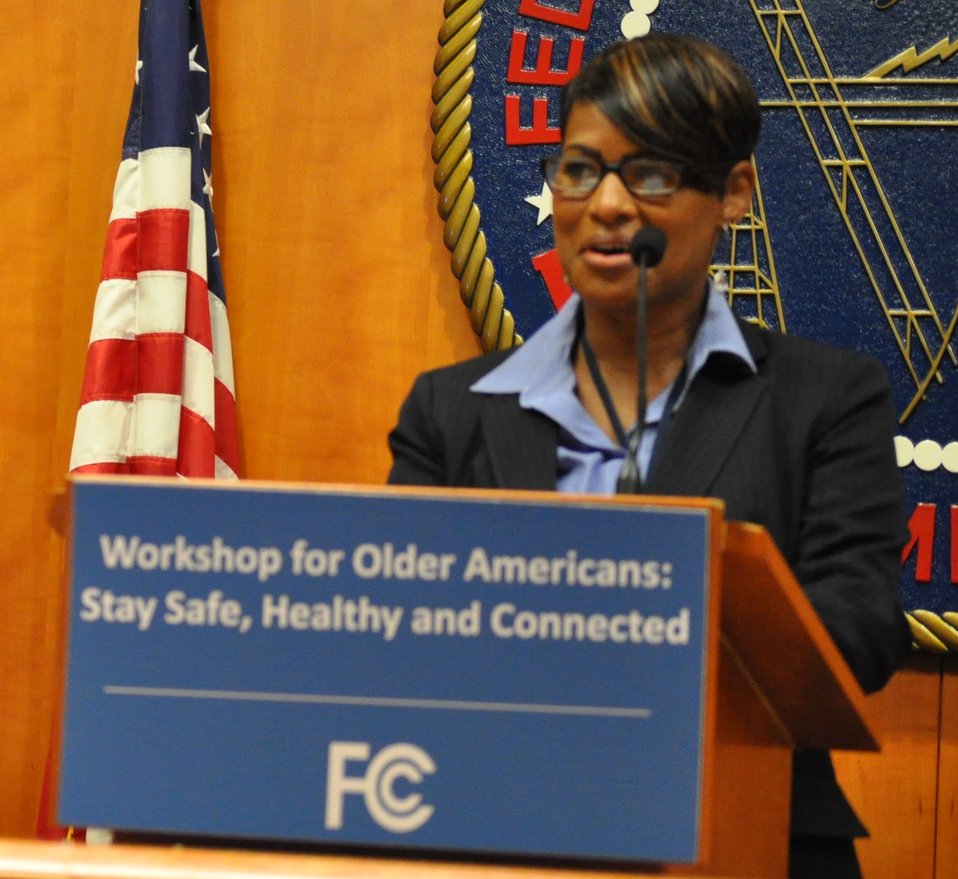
5

Older Americans Workshop Agenda Stay Safe, Stay Healthy, Stay Connected